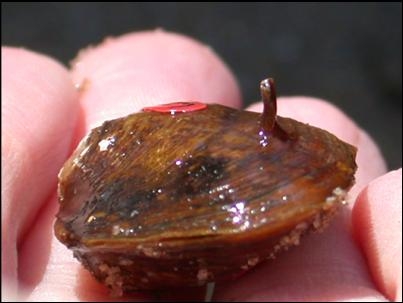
James spinymussel found during an aquatic stream survey in Virginia